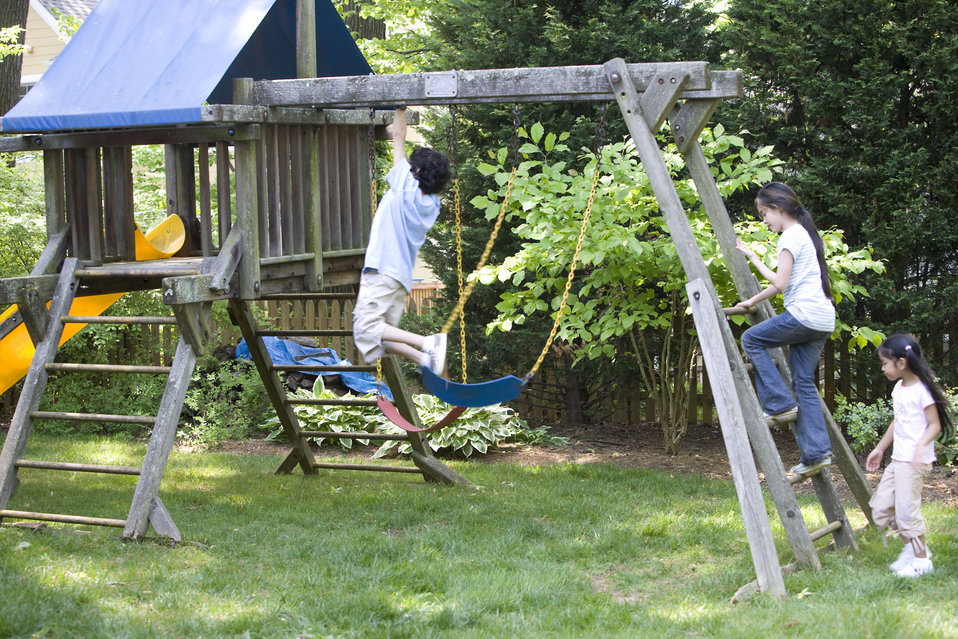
Children love playing outside, and these children were thoroughly enjoying their wooden swing set, and all were having fun in the fresh outdoor air, and the beautiful weather. It's important to note that older wooden playsets may have been treated with arsenic and/or creosote, and therefore, parents need to know if these chemicals were used in their manufacture.